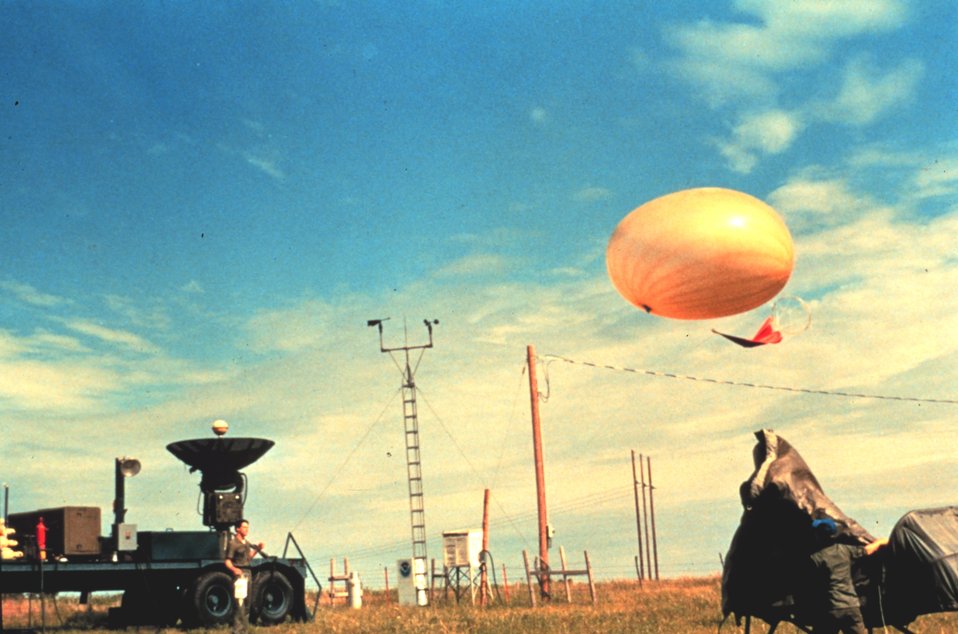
Large rawinsonde balloon is released in foreground It will measure atmospheric conditions during ascent. In the background are surface weather instruments. These measure temperature, relative humidity, pressure and precipitation. A mobile radar unit is also shown.